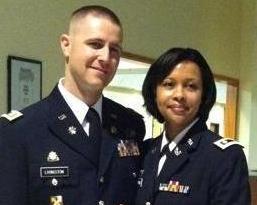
Ben and Dolly Livingston

Ben Livingston.
.
Ben Livingston enlisted in the Army in August 1992 and served four years on Active Duty and was stationed at Ft Leonard Wood for Basic Training; Ft Bragg, NC, for 2 years; Sinai, Egypt, for one year and finished out the remaining time at Ft Stewart, GA. He joined the Army Reserves and in January, 2003, he was mobilized as a Platoon Sergeant in Heavy Equipment Transporter (HET) Transportation Company. He spent 13 months leading convoys from Kuwait to multiple locations in Iraq..
.
In November 2007, he was commissioned as Transportation Officer in the Army Reserves and is serving currently as a Captain in the Army Reserves. His wife, Dolly, is currently serving as a Major in the Judge Advocate General Corps as a full-time Army Reservist..
.
He has worked for the U.S. Fish and Wildlife Service since 2007 and he now supervises the HR office for the Southeast Region.